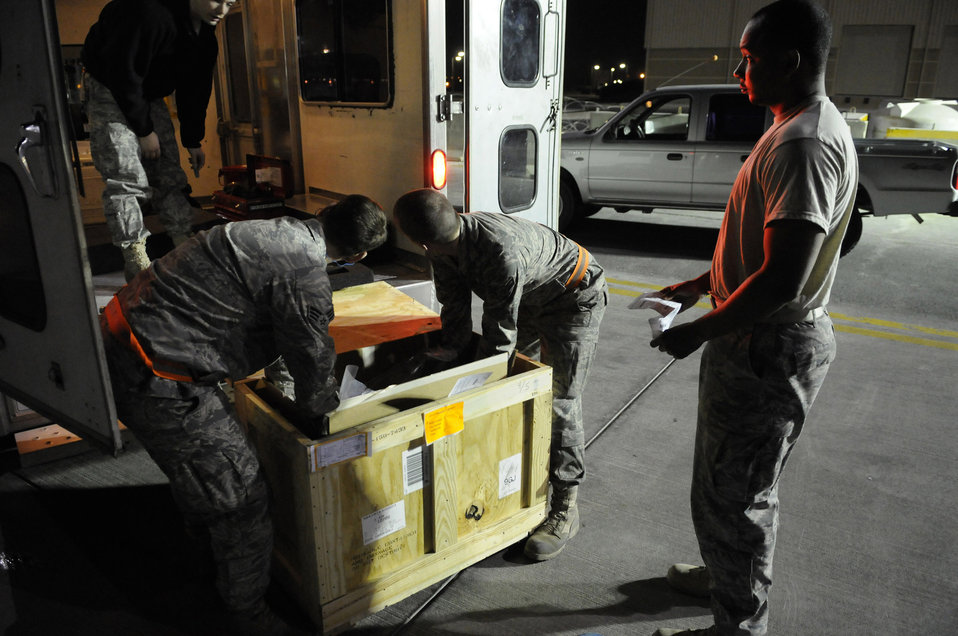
Parts to go

Staff Sergeant Daniel Harrington (right) awaits a signature on a delivery receipt, while Senior Airman Adam Hall, Senior Airman Peter Yurgin and Airman 1st Class Cody Pratt unpack a part Dec. 28 for a B-1B Lancer receiving maintenance at an air base in Southwest Asia. Sergeant Harrington is supply journeyman assigned to the 379th Expeditionary Logistics Readiness Squadron. Airmen Hall, Yurgin and Pratt are maintainers with the 379th Expeditionary Aircraft Maintenance Squadron.